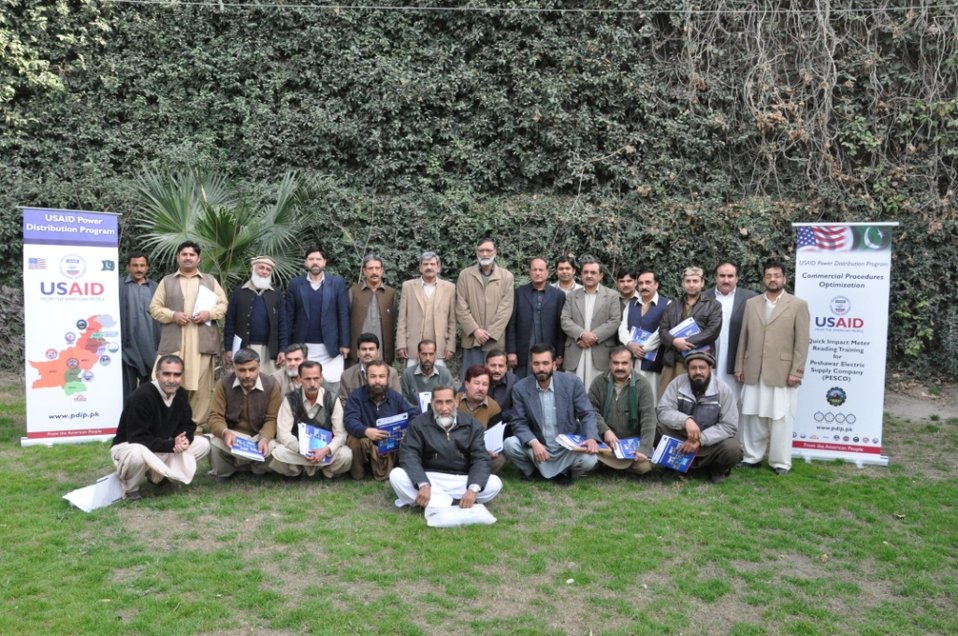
Meter Reading Training

Peshawar, February 27, 2012 - The USAID organized 'Quick Impact Meter Reading Training' at PESCO.